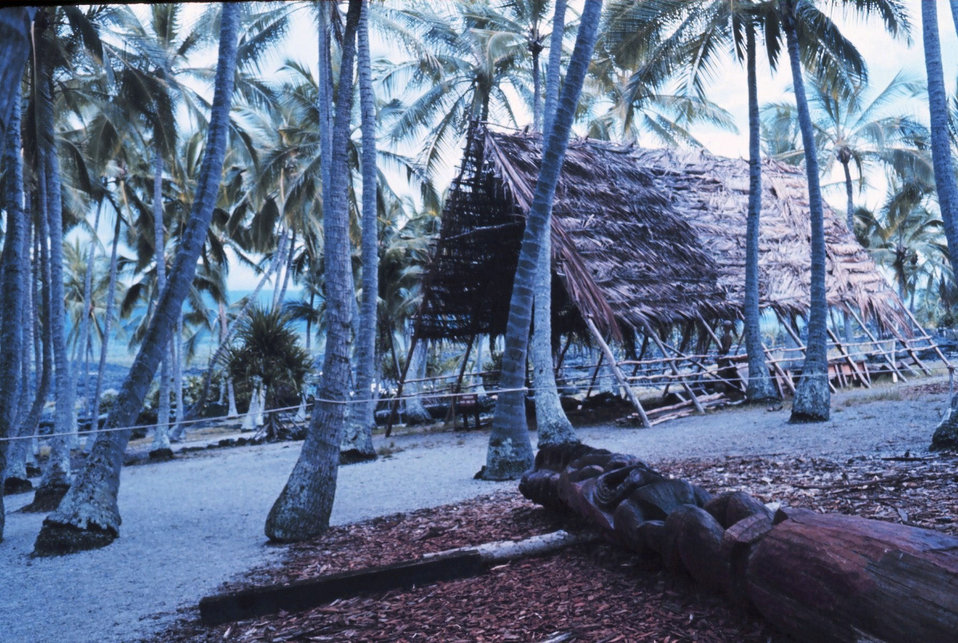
The City of Refuge